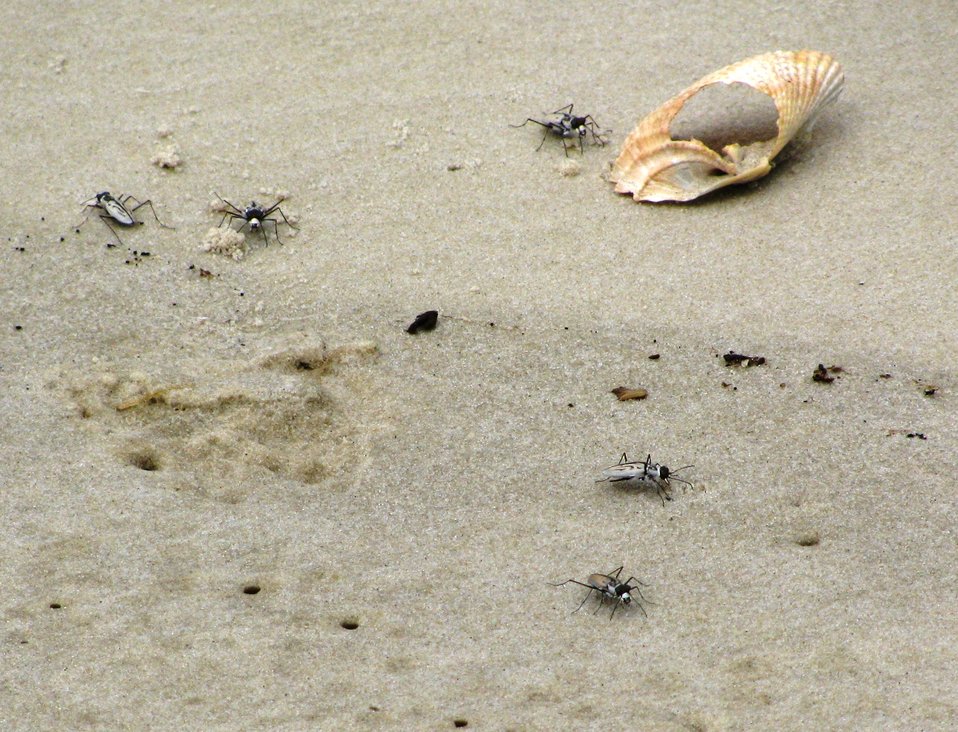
Northeastern beach tiger beetle

This image shows the size of adult beetles.